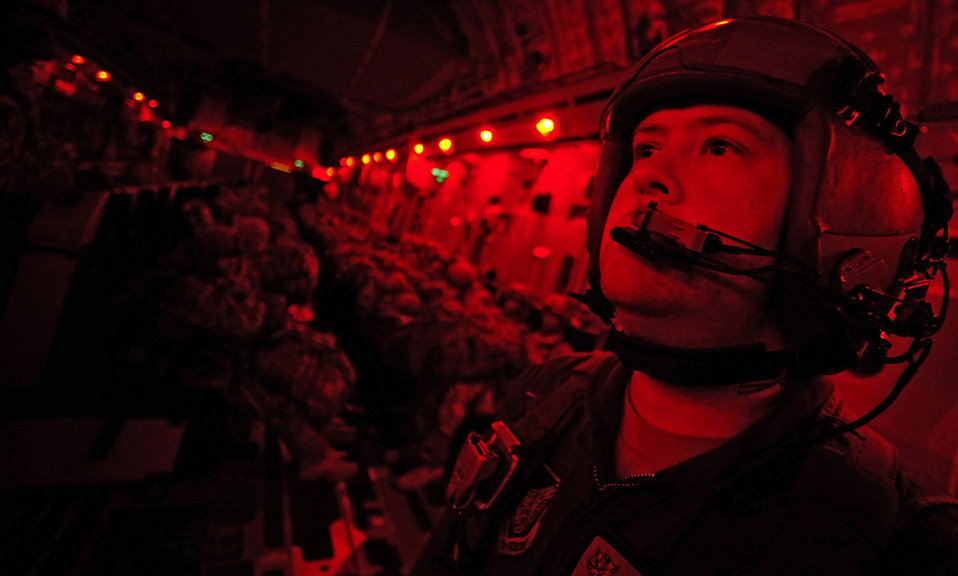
Redlight Flight

Staff Sgt. Lucas Crumpton waits for the